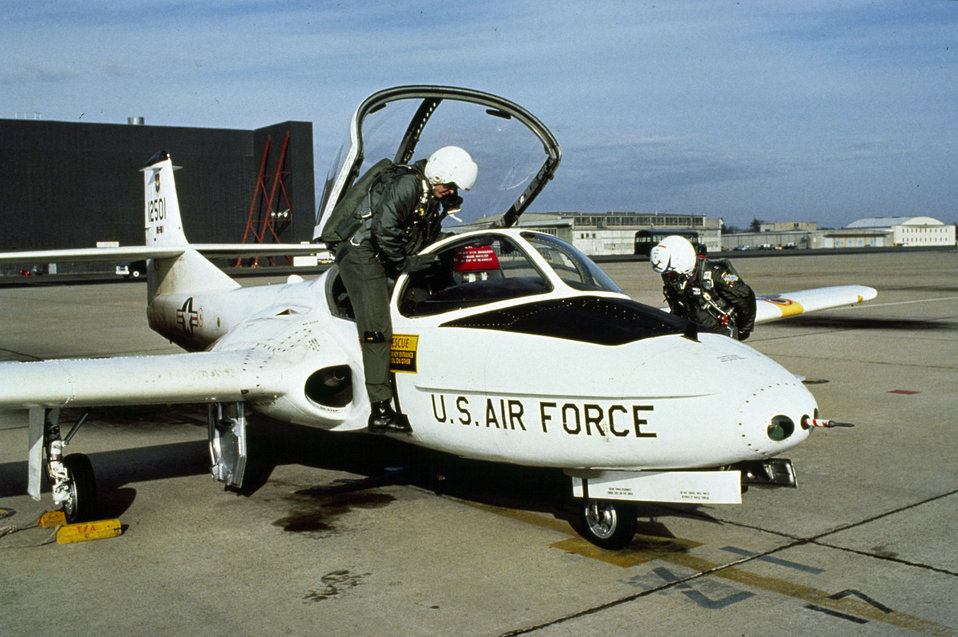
T-37 Tweet

1950s -- The T-37B Tweet is a twin-engine jet used for training student pilots in fundamentals of aircraft handling. It became part of the Air Force inventory in 1955.